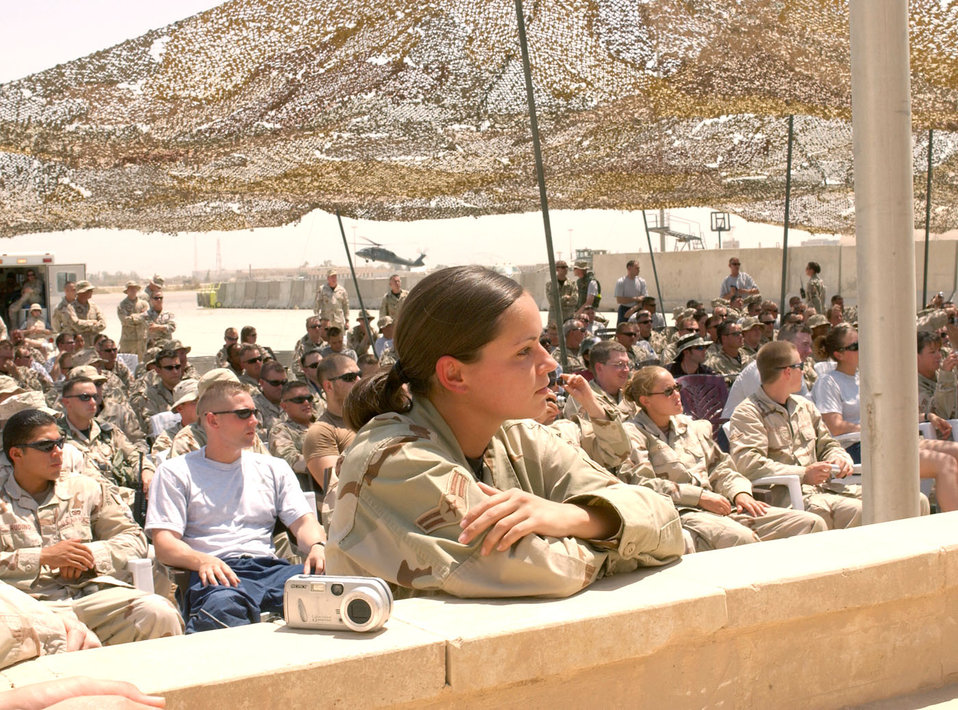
USO brings Rascal Flatts to Baghdad

BAGHDAD, Iraq -- Airman 1st Class Autumn Grasty listens to a performance by country music group Rascal Flatts. The group is on a United Services Organization tour through Iraq to thank U.S. servicemembers for their dedication and sacrifice. Airman Grasty is deployed to the 447th Expeditionary Communications Squadron from McGuire Air Force Base, N.J.